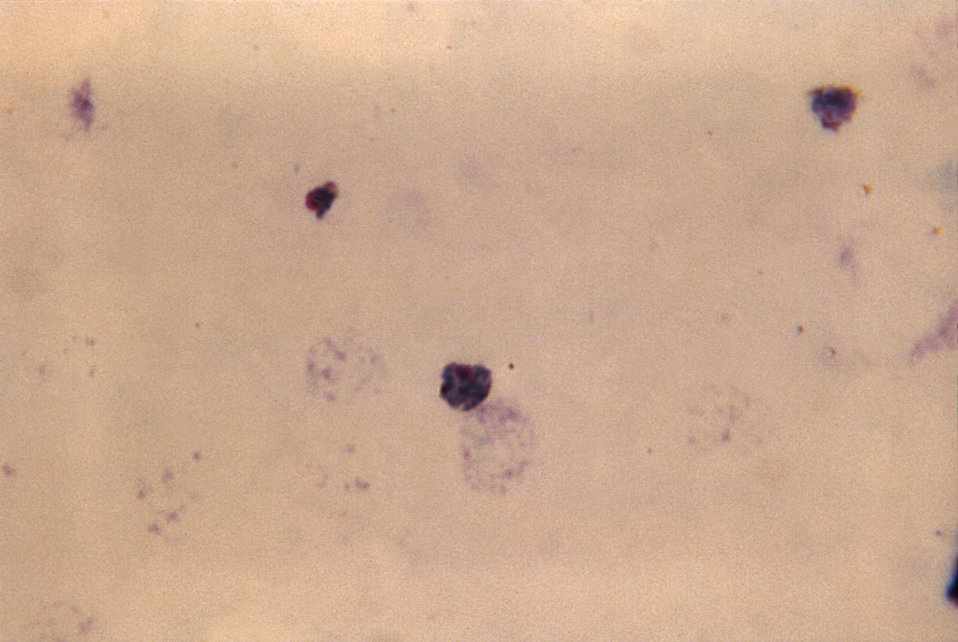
This thick film Giemsa stained micrograph depicts a mature Plasmodium ovale trophozoite.